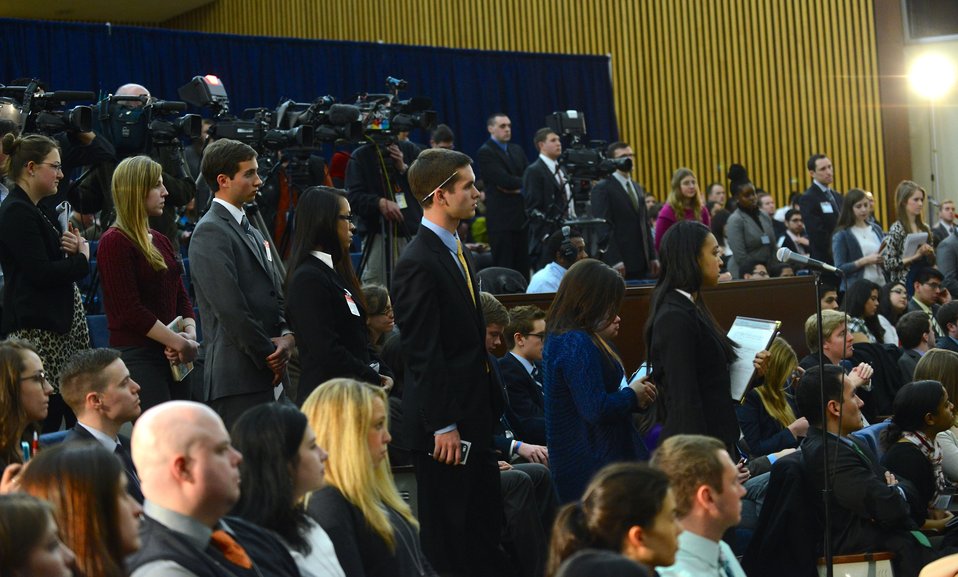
A Student Asks Secretary Kerry Questions During a Town Hall

A student asks U.S. Secretary of State John Kerry a question during a Town Hall on 'Making Foreign Policy Less Foreign' at the U.S. Department of State interns at the Department in Washington, D.C., on March 18, 2014.